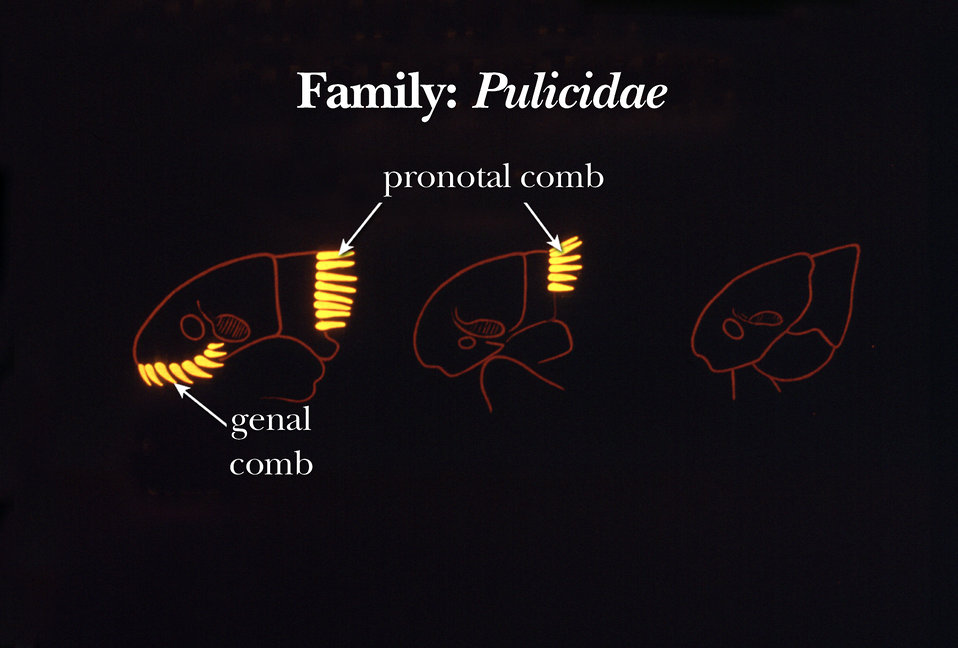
The pronotal and genal combs may be used when identifying fleas who are members of the family Pulicidae.